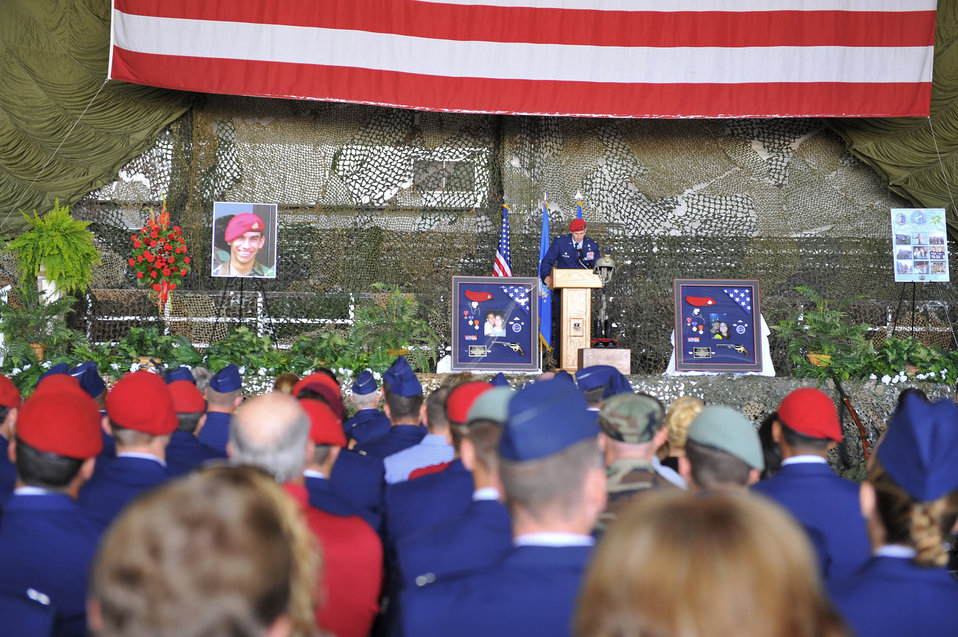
SrA Sanchez

Maj. Christopher Larkin speaks to the audience during Senior Airman Daniel Sanchez's memorial service Sept. 28, 2010, at Hurlburt Field, Fla. Airman Sanchez was a combat controller assigned to the 23rd Special Tactics Squadron and was killed in action Sept. 16, 2010, in Afghanistan. Major Larkin is the 23rd STS commander.